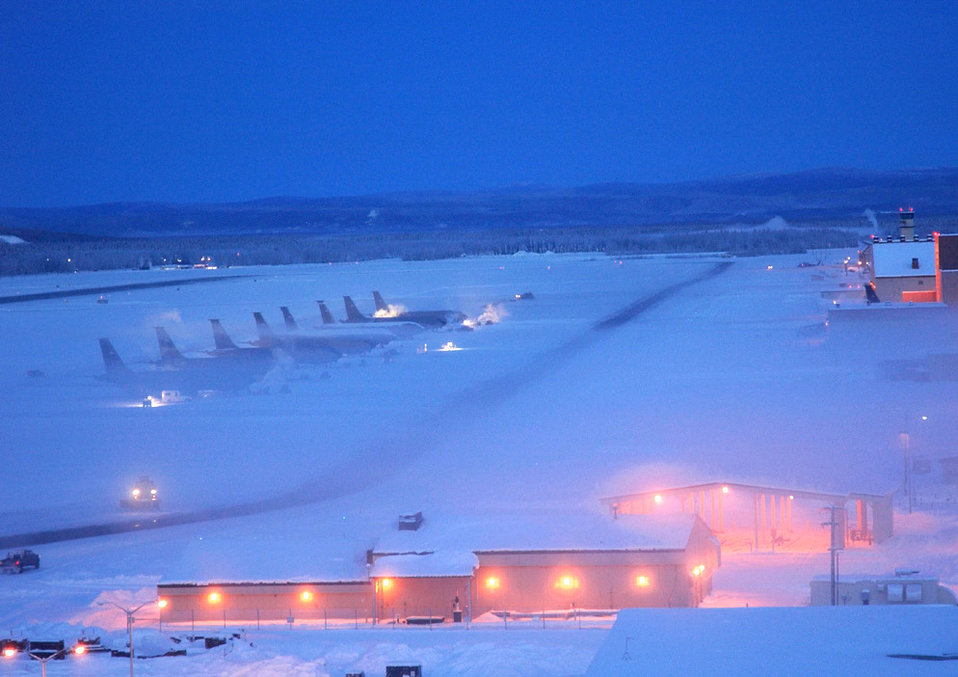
Winter wonderland

EIELSON AIR FORCE BASE, Alaska -- KC-135 Stratotankers from Kadena Air Base, Japan, and the Alaska Air National Guard's 168th Air Refueling Wing sit on the flightline here Dec. 21. The Alaskan tankers belong to the only Arctic-region refueling unit for Pacific Air Forces.